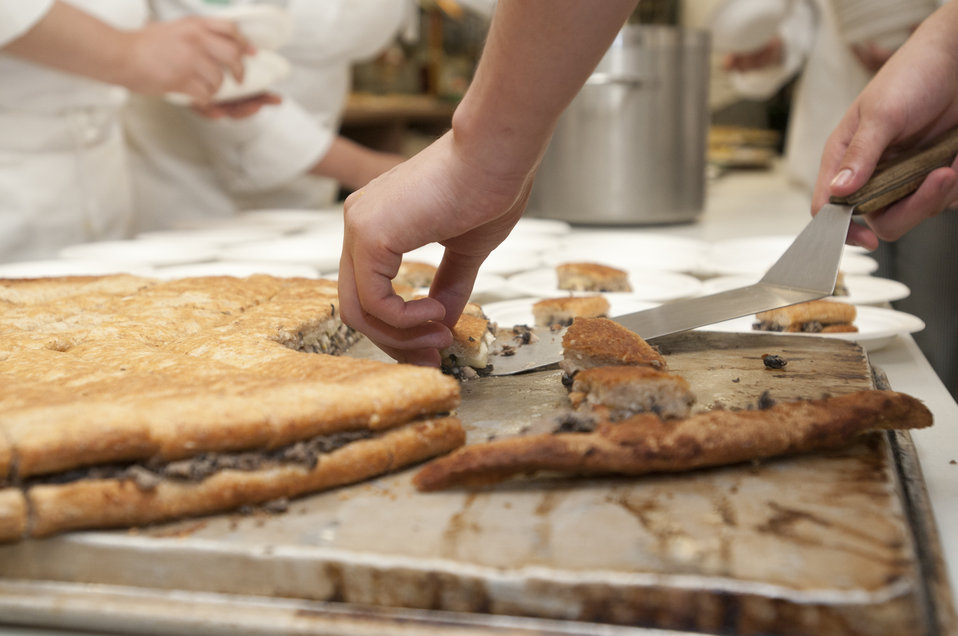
Chicago student chefs sized and plate Afro-Caribe Plancha for the judges during the Cooking Up Change, National Healthy Cooking Competition at the USDA in Washington, DC, on Monday, May 23, 2011.